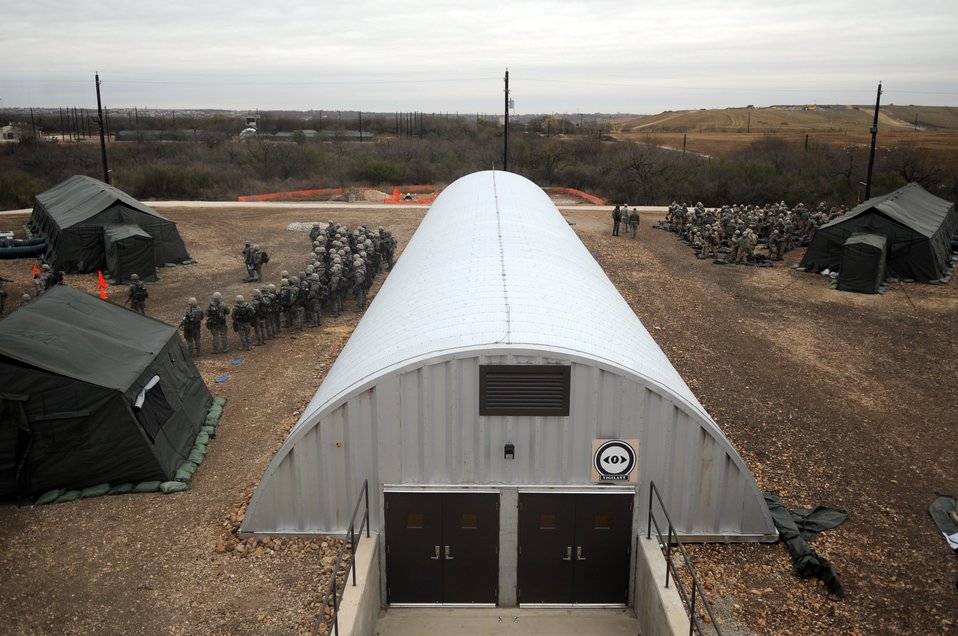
Trainees slew the BEAST in new basic training program

The five-day deployment exercise called the Basic Expeditionary Airman Skills and Training, or BEAST kicked off Dec. 15 at Lackland Air Force Base, Texas. The BEAST is the newly built complex added into the extended, 8.5-week Basic Military Training curriculum that began Nov. 5.